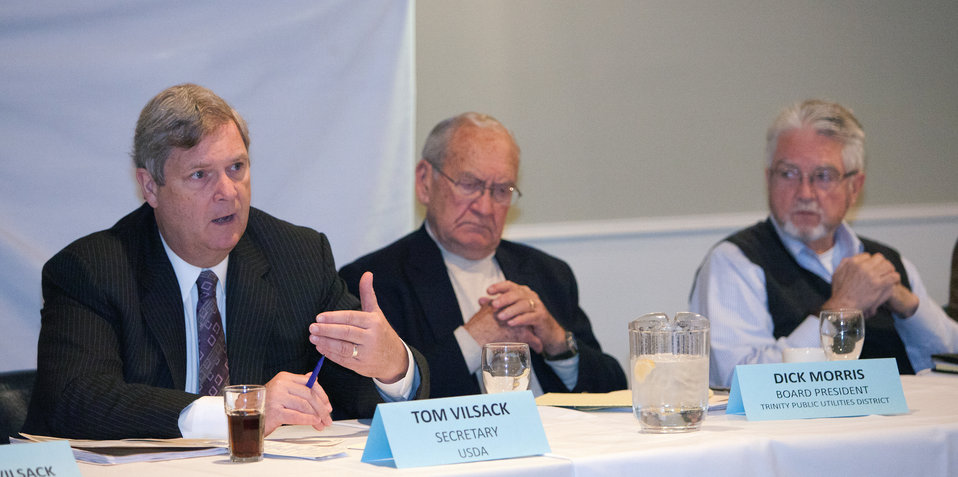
Agriculture Secretary Tom Vilsack speaks at a community roundtable in Weaverville, CA on Dec. 10, 2012. (L to R Secretary Vilsack, Board President Trinity Public Utilities District Dick Morris and Board Member of Trinity County Chamber of Commerce John Letton).